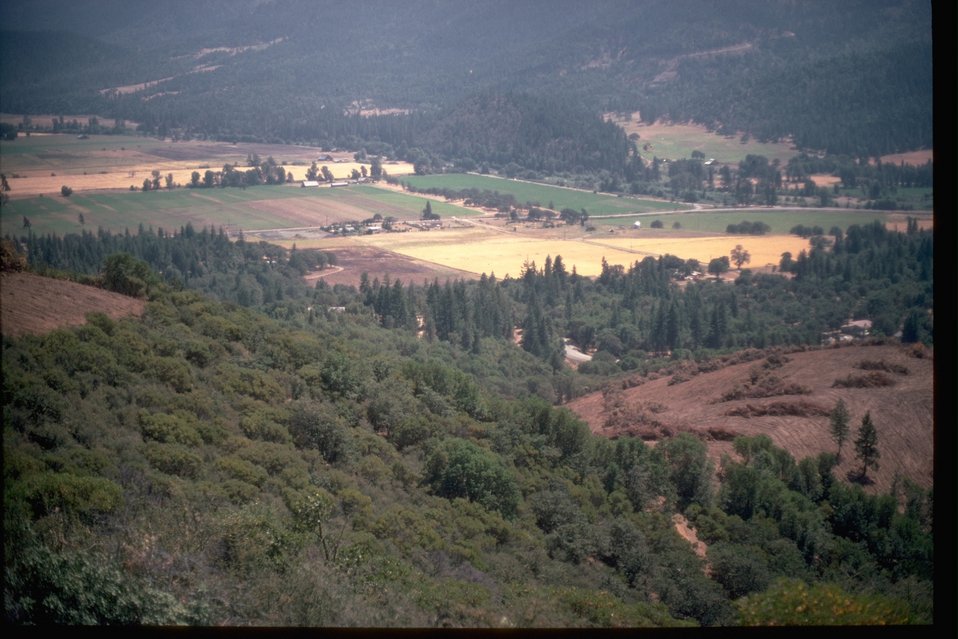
Brushfield conversion scarification project.